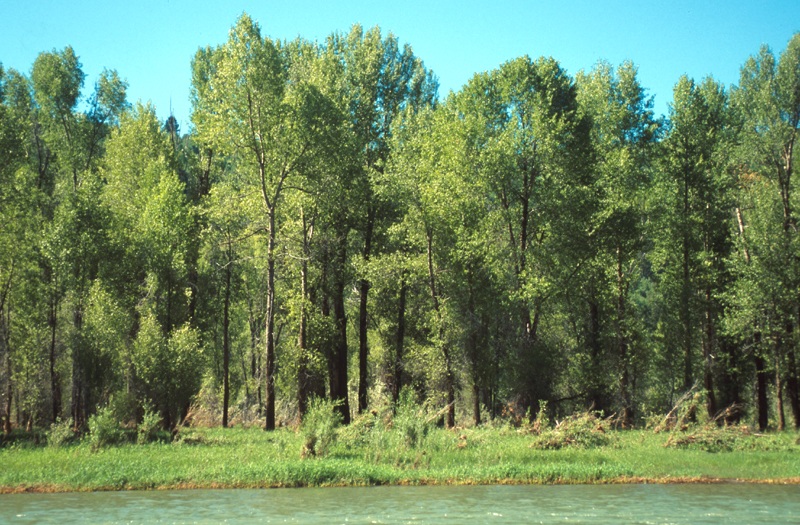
South Fork of the Snake River